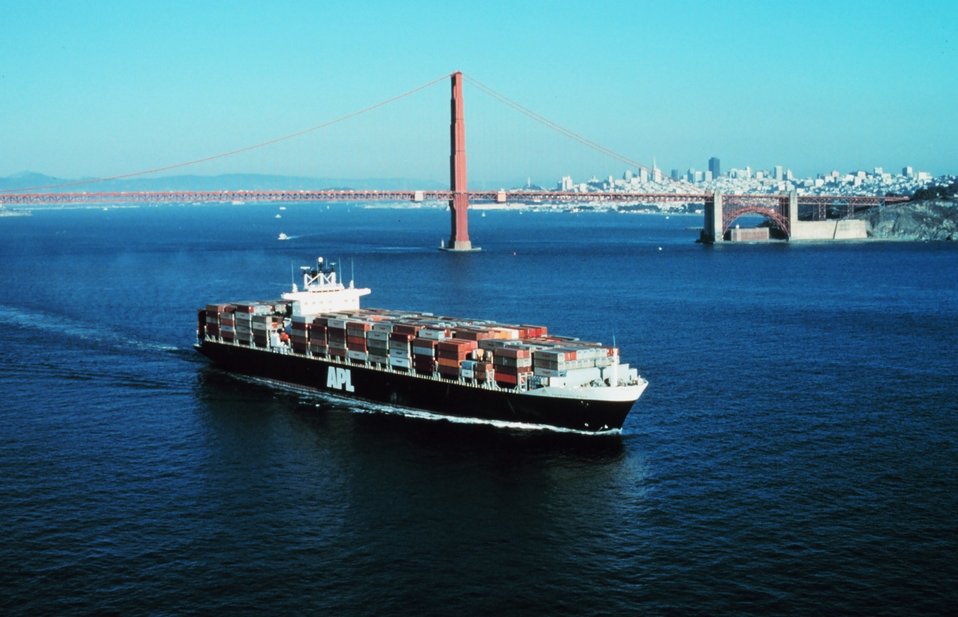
An outward bound containership with the Golden Gate and San Francisco skyline in the background.